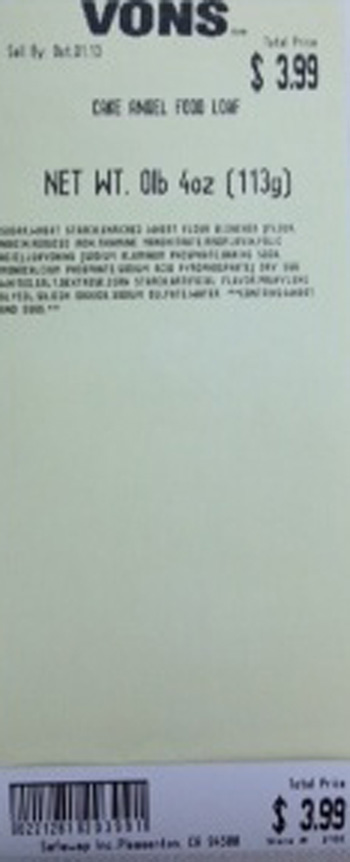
RECALLED – Angel Food Cakes

September 26, 2013 – Product Recall – Safeway Recalls Several Varieties of Angel Food Cake Due to Undeclared Soy and Milk Allergens.